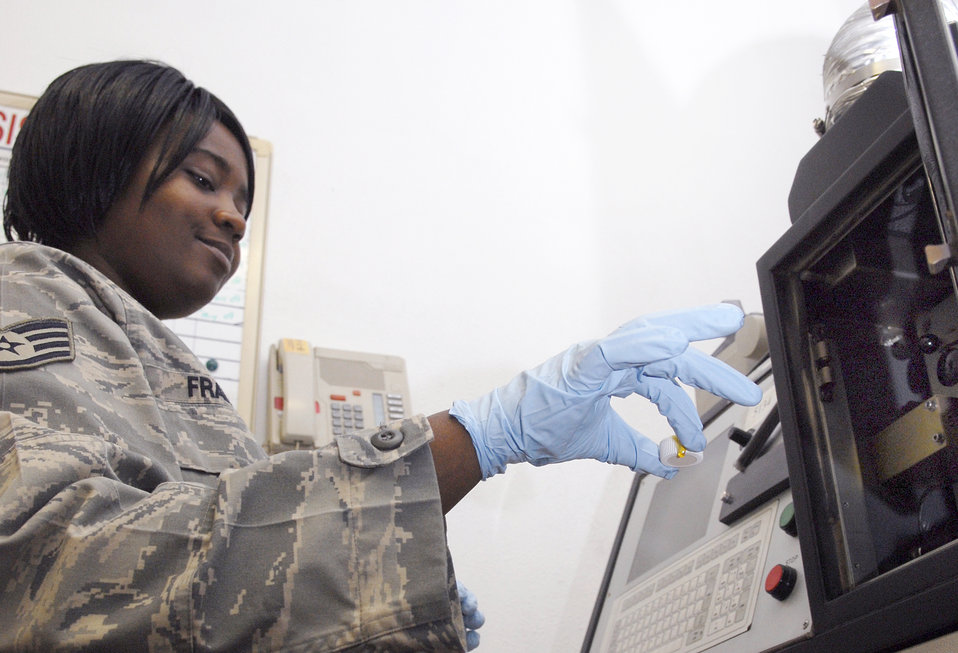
Hunting or hidden damage

Staff Sgt. Josette Francis places a sample of jet engine oil into a spectrometer to check for contaminating elements or metal fragments which could cause engine damage May 14 at an air base in Southwest Asia. The oil sample is being checked as part of the Joint Oil Analysis Program that tests oil samples from various locations in the U.S. Central Command's area of responsibility. Sergeant Francis is an inspector with 379th Expeditionary Maintenance Squadron's non-destructive inspection, and is deployed from Aviano Air Base, Italy.